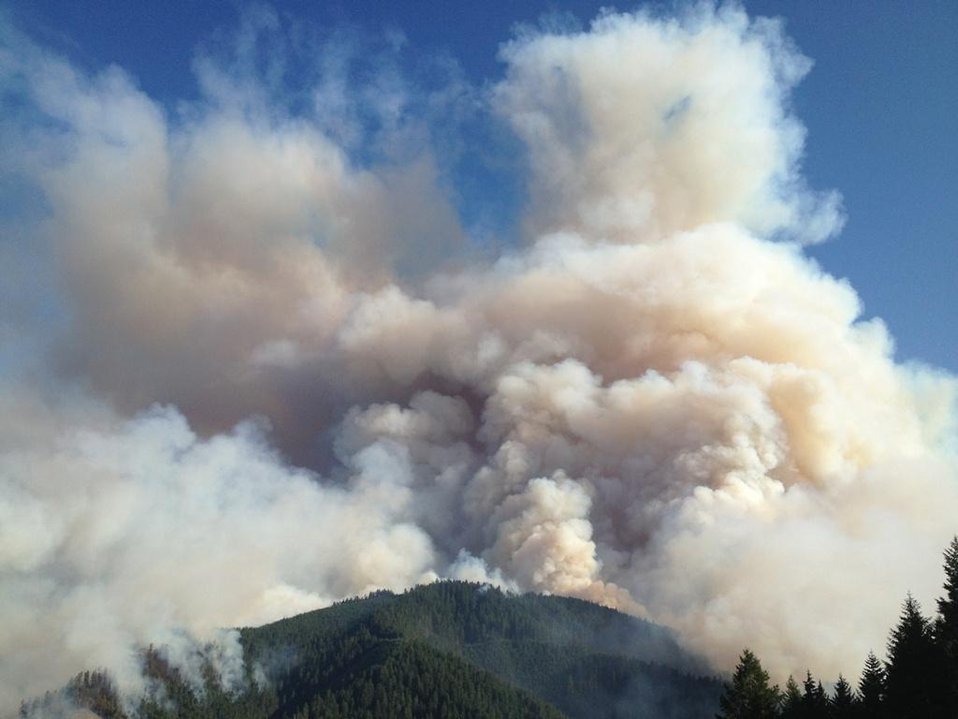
The Douglas Complex Fire near Glendale, OR began on Jul. 26, 2013 by lightning has consumed approximately 21,000 acres and is approximately 2% Photo by Douglas Forest Protective Association.U.S.